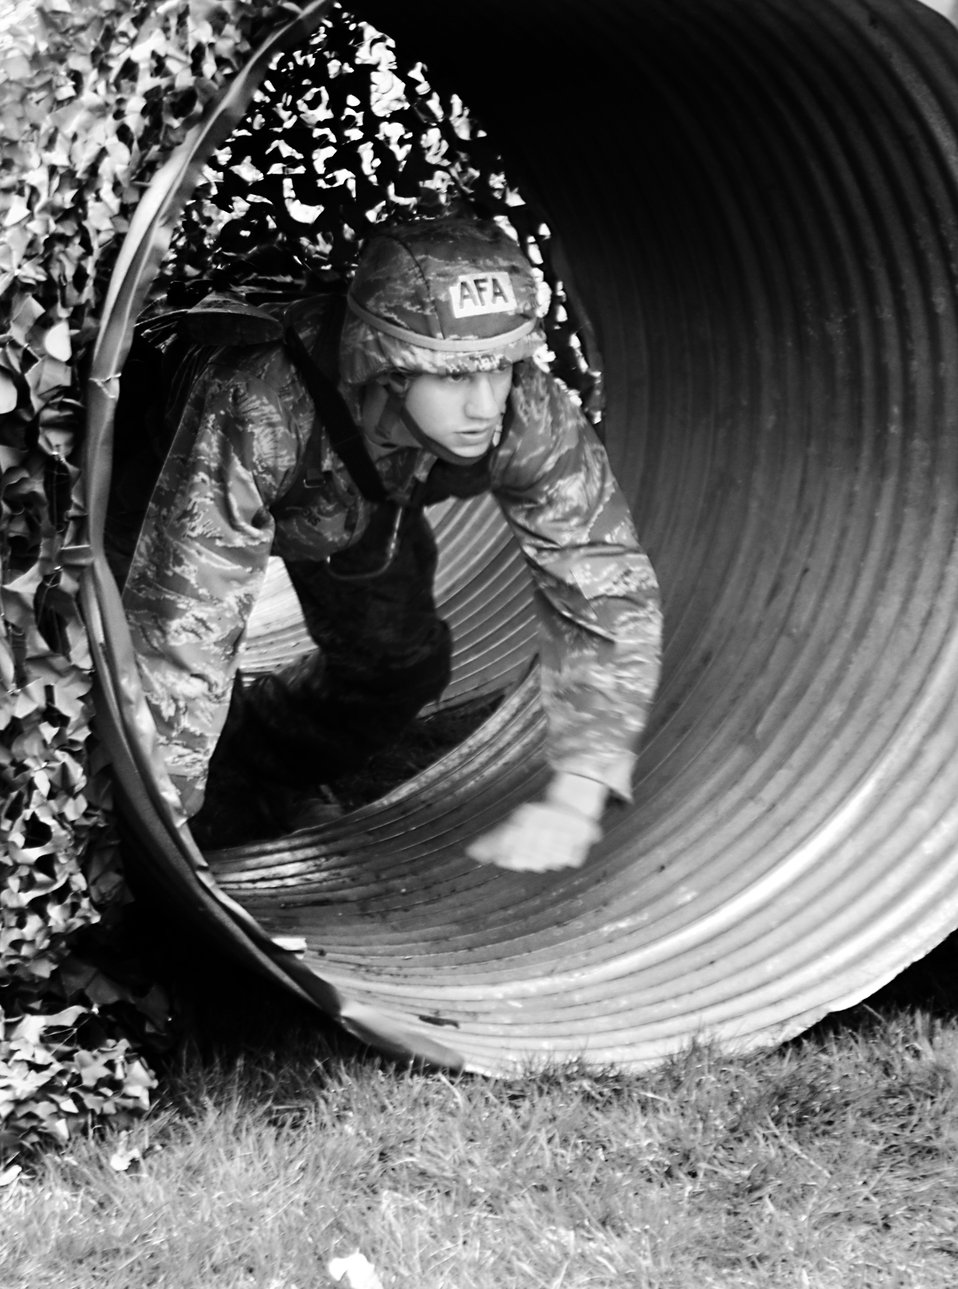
Meeting the challenge

Air Force Academy Cadet 1st Class Andrew Owens pushes through one of the final obstacles April 16, 2011, during the Sandhurst Competition at the U.S. Military Academy, N.Y.